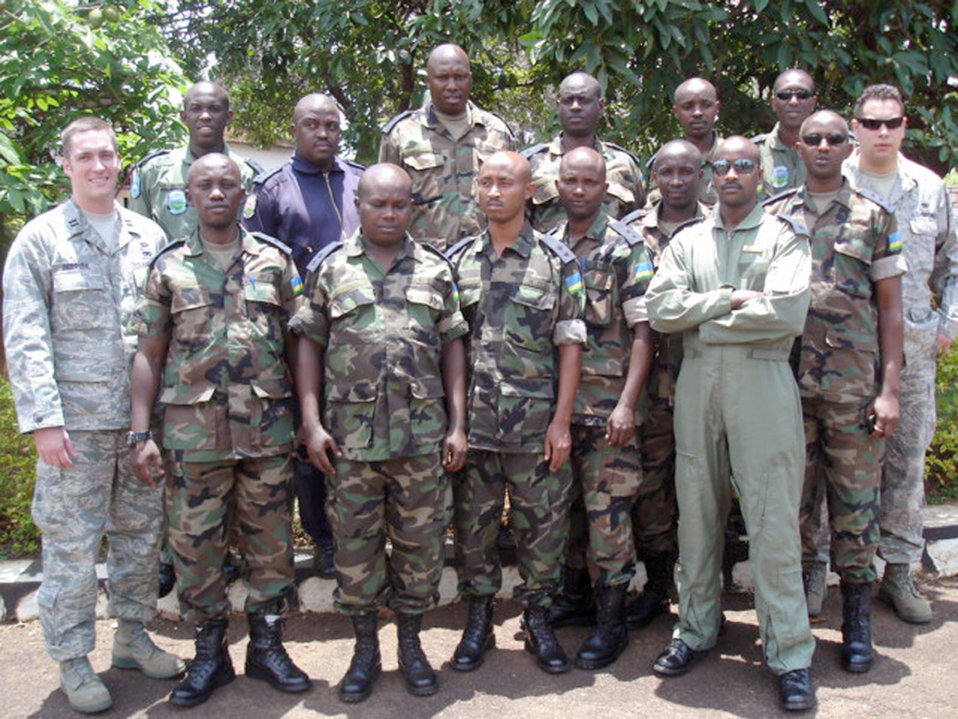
Airmen travel to Rwanda, teach maintenance management

Capt. Brian DeBruhl (far left) and Tech. Sgt. Brandon Macken (far right, second row) pose for a photo with officers from the Rwanda air force. The pair traveled to Rwanda to help train the officers in aircraft maintenance and logistics and to conduct a maintenance management training course. Captain DeBruhl is the 373rd Training Squadron's Detachment 4 commander. Sergeant Macken is a 373rd TRS Det. 4 instructor.